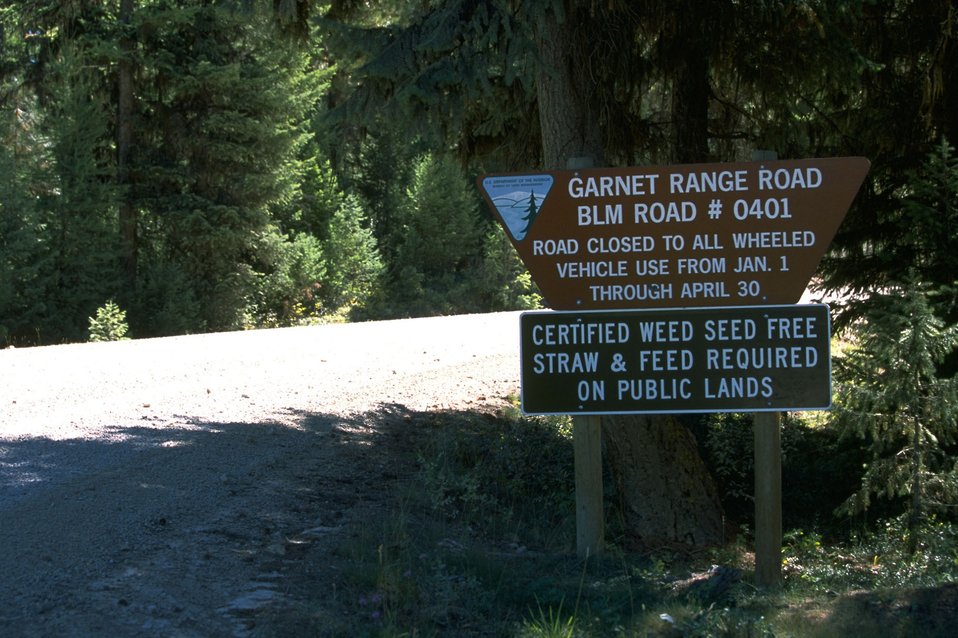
Garnet Back County Byway sign with OHV rules